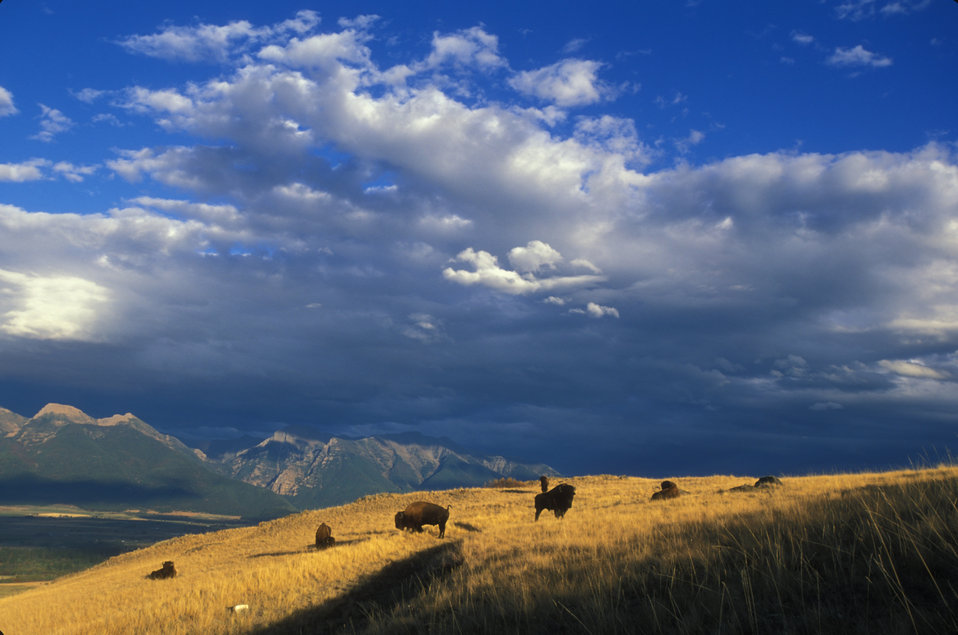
Bison on the National Bison Range

Expansive view of bison grazing on a mountainside in the National Bison Range